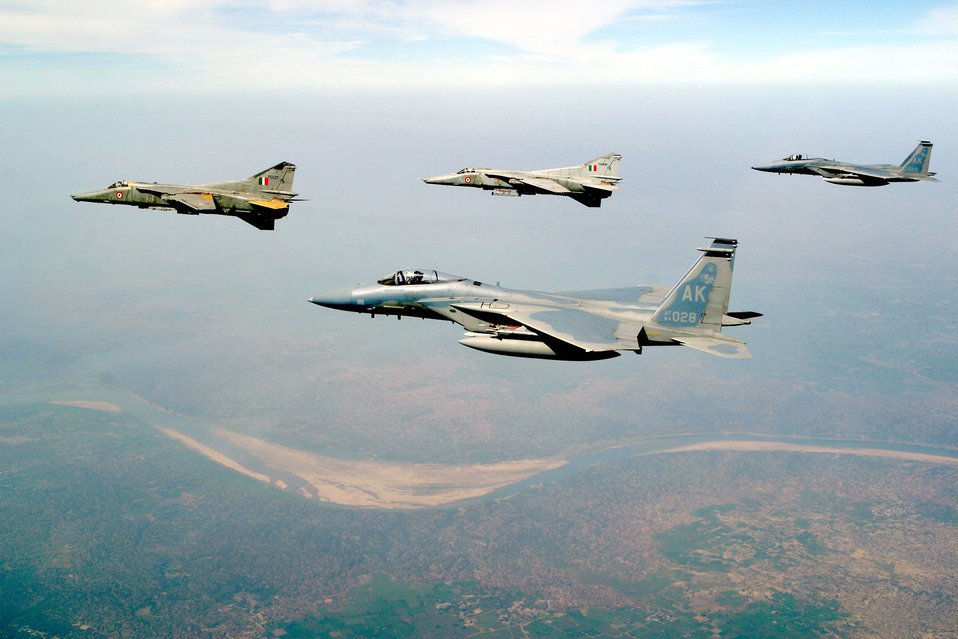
Cope India in full force

OVER INDIA -- Two F-15 Eagles from Elmendorf Air Force Base, Alaska, and two Indian air force MIG-27 Floggers fly together during Cope India '04. The exercise is the first dissimilar air combat training exercise between the two air forces in more than 40 years. The 10-day exercise ended Feb 25.